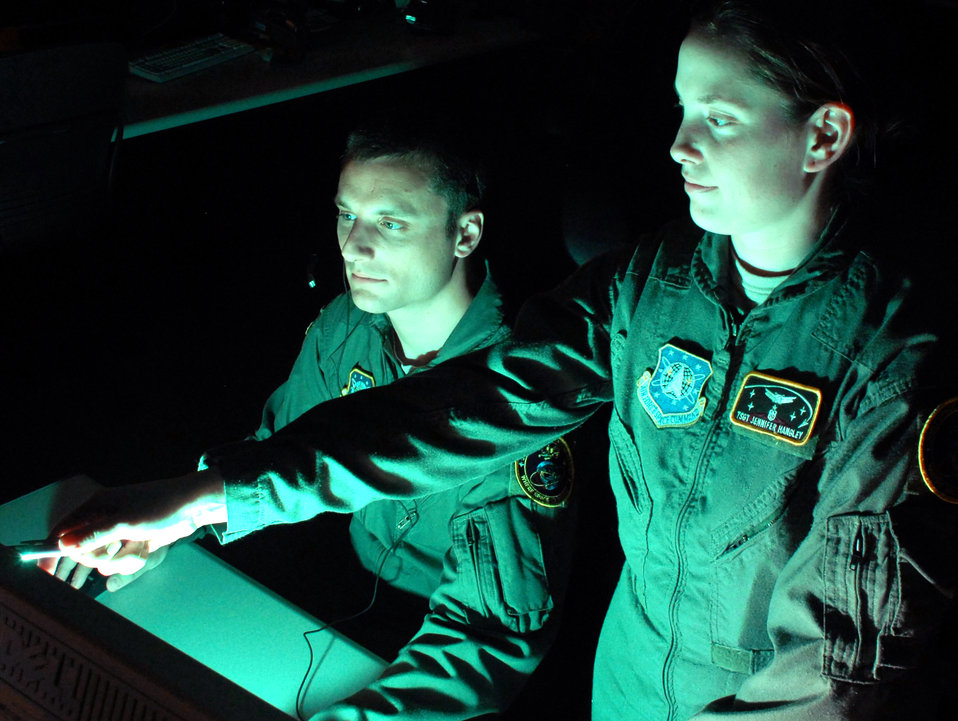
Joint Space Operations Center

Tech. Sgt. Gavin Iteen (left) and Tech. Sgt. Jennifer Hangley, missile warning duty officers at the Joint Space Operations Center at Vandenberg Air Force Base, Calif., review data received from the Delta II site there. The purpose of the JSpOC is to provide a focal point for the operational employment of worldwide joint space forces, and enable the commander of Joint Functional Component Command Space to integrate space power into global military operations.